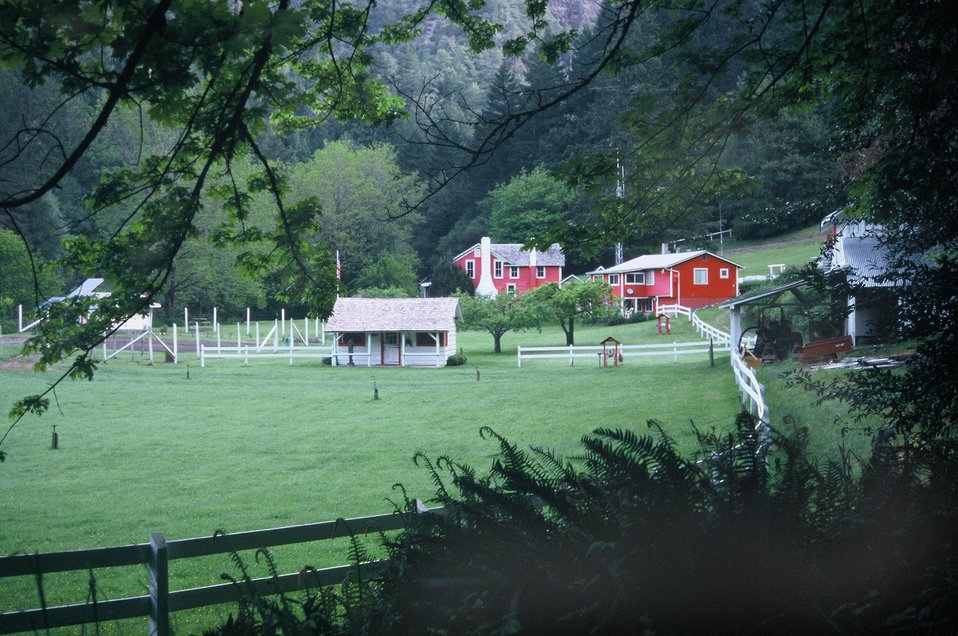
Wild section of the Rogue River from Grave Creek to Foster Bar May 19 to May 22.